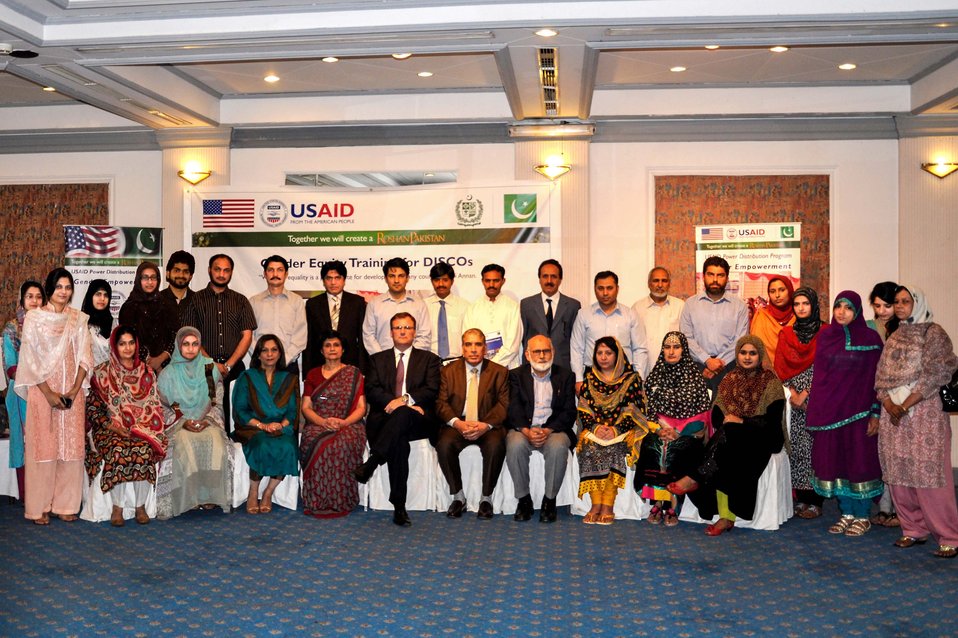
USAID helps reshaping the environment for women at DISCOs

Participants of Gender Equity Training from PESCO.